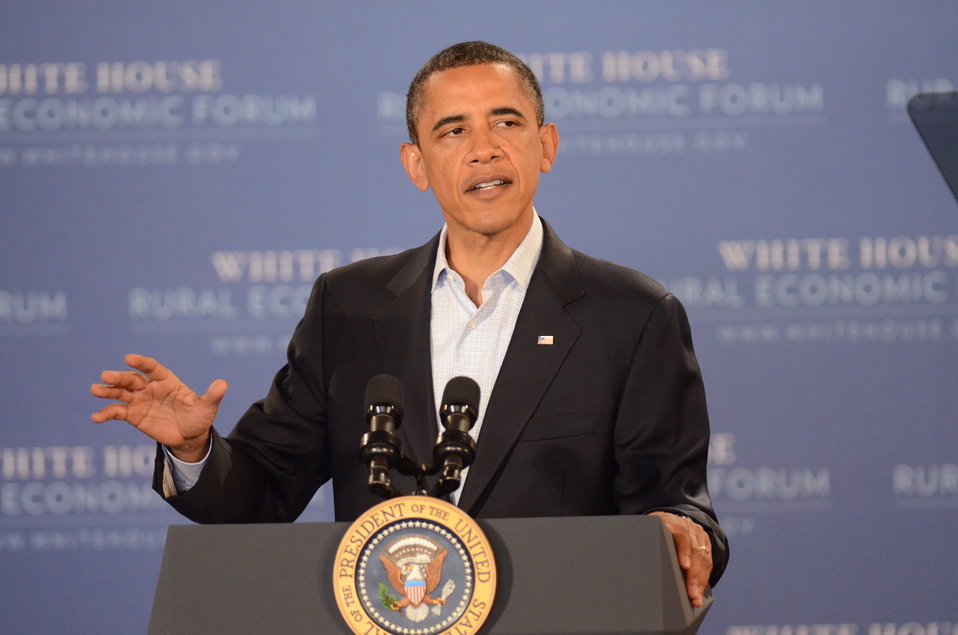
President Barack Obama speaking at the Northeast Iowa Community College, for a White House Rural Economic Forum on Tuesday, Aug. 16, 2011. The President’s visit will focus on agriculture’s contribution to the national economy, and how to create more jobs in rural America.